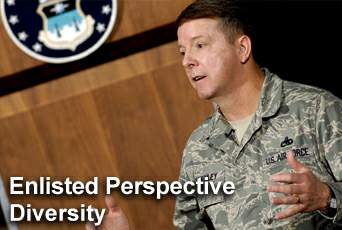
Enlisted Perspective

Chief Master Sgt. of the Air Force Rodney J. McKinley focuses on diversity in his latest